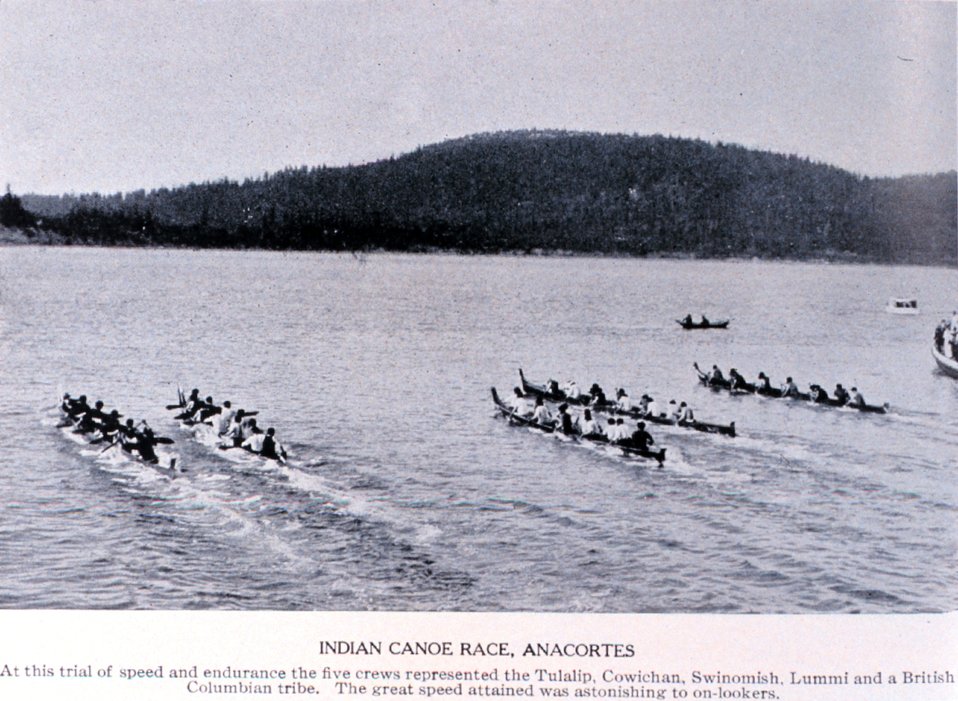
'Indian Canoe Races, Anacortes'. In: 'Puget Sound and Western Washington Cities-Towns Scenery', by Robert A. Reid, Robert A. Reid Publisher, Seattle, 1912. P. 108.